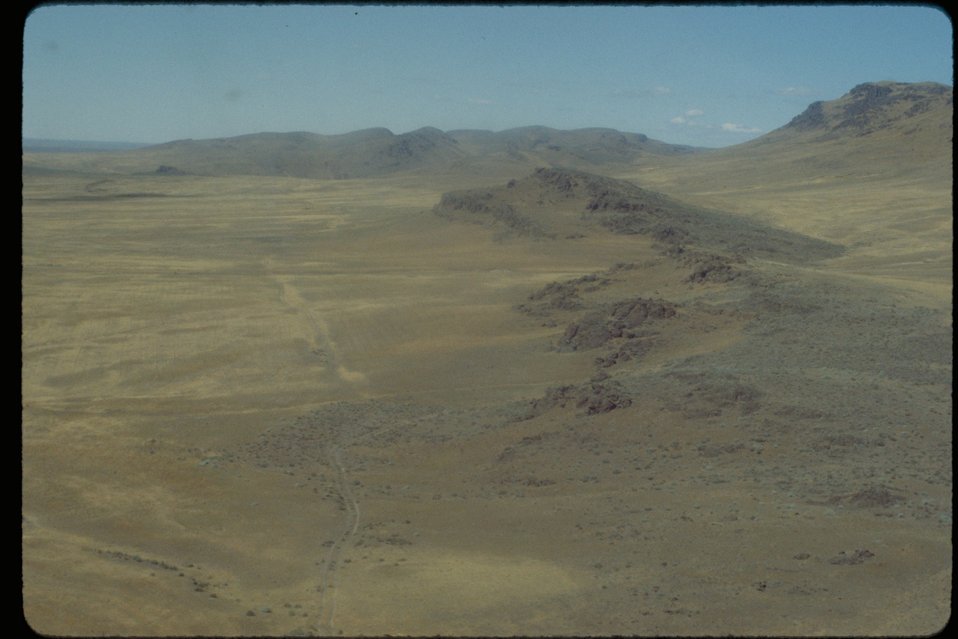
Oregon Trail Kelton Road North of Mountain Home Lower Snake River District